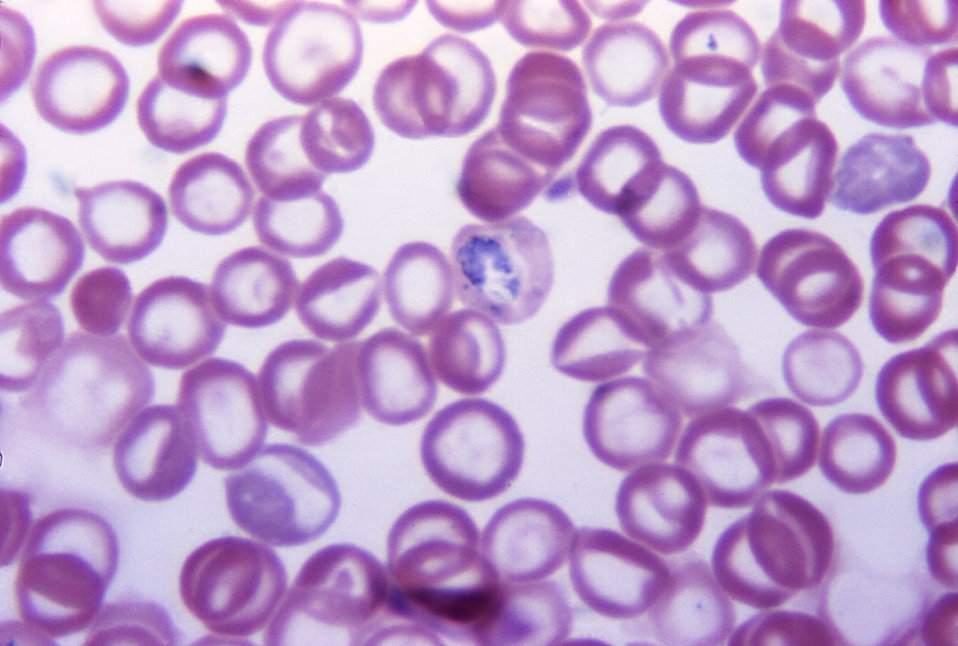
This Giemsa stained micrograph depicts an example of a slightly acidic slide that yielded a pink colored resultant stain.